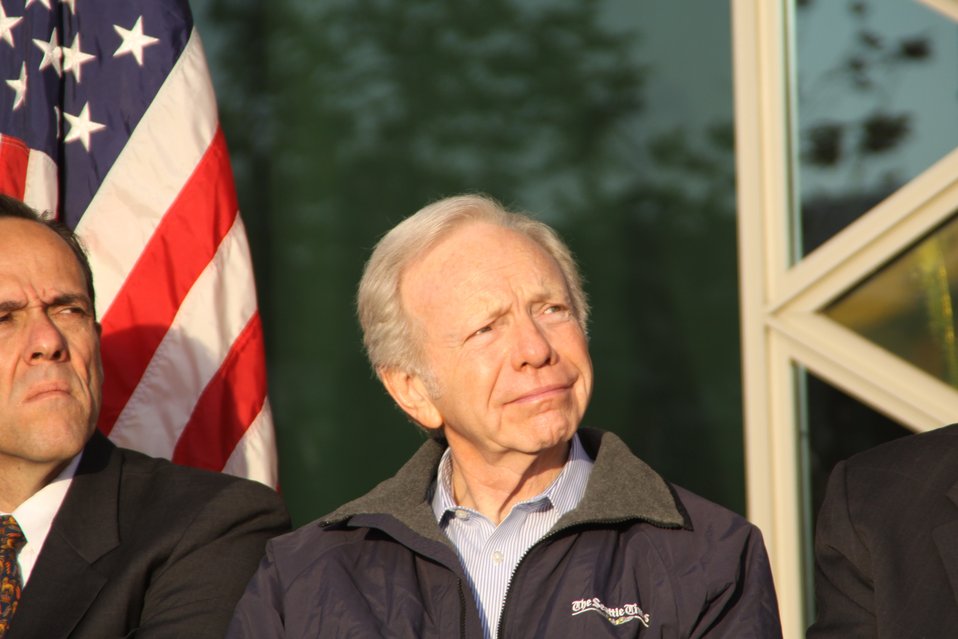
Senator Lieberman